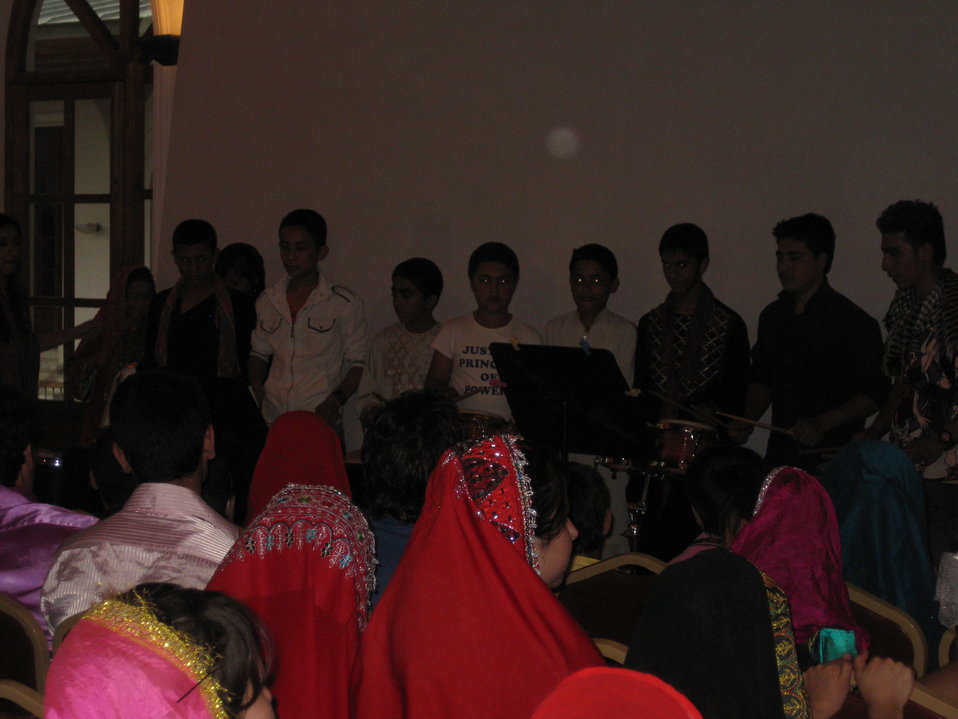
Afghan Youth Voices 118